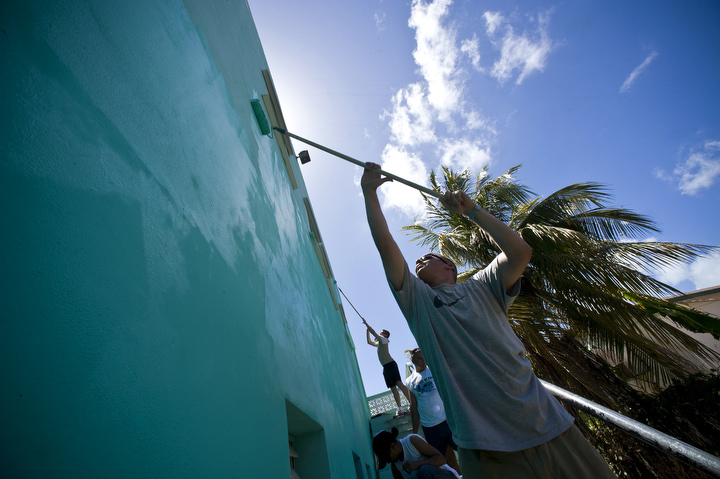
Operation Southern Partner paints a brighter future in Belize

AirmEn of Operation Southern Partner spenD the day painting the 13-classrom exterior of the Stella Maris School for the Physically Disabled June 8 in Belize City, Belize. The operation is meant to enhance the spirit of cooperation between the two countries.